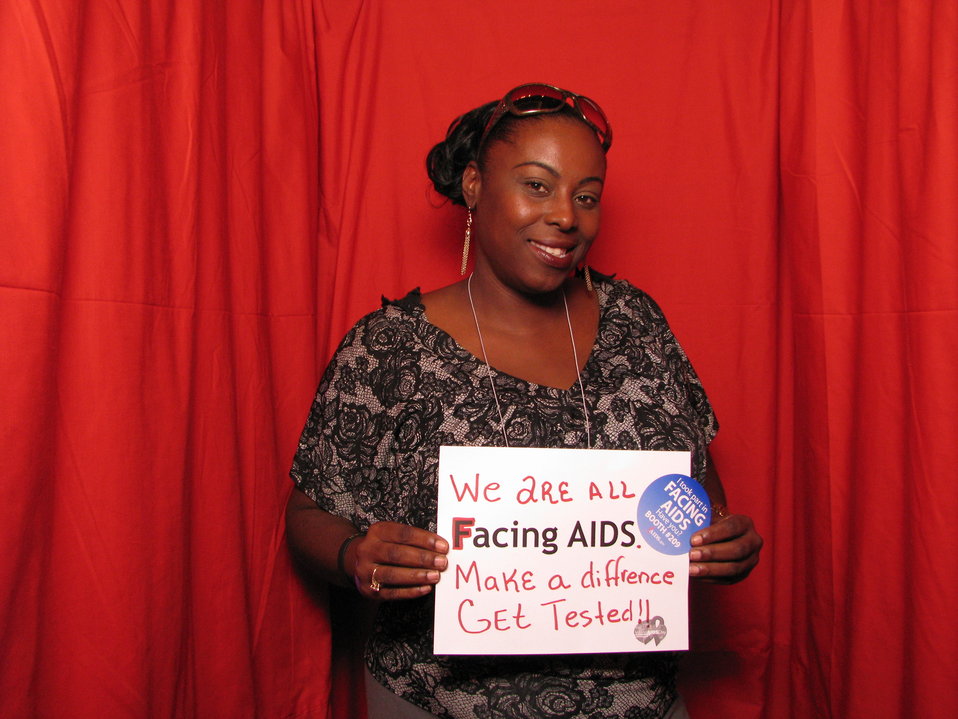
We are ALL FACING AIDS Make a difference-- Get Tested!!

From the AIDS.gov photo booth at the U.S. Conference on AIDS, September 2010 (Orlando, FL).